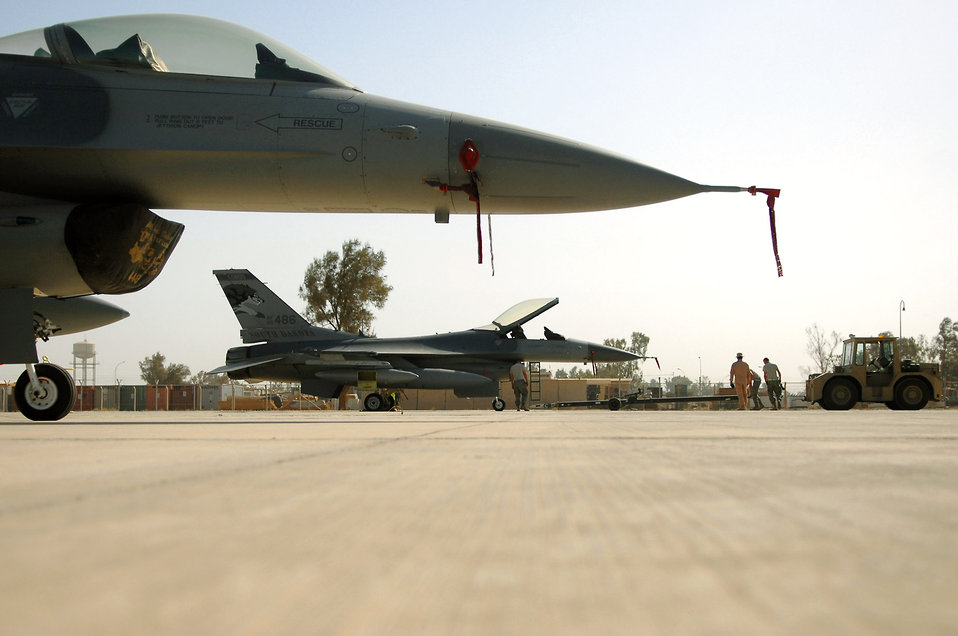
The changing of the Guard

Members of the Iowa and the Wisconsin Air National Guard, assigned to the 332nd Expeditionary Aircraft Maintenance Squadron at Balad Air Base, Iraq, prepare to move F-16 Fighting Falcon aircraft June 13 into hardened shelters. The aircraft and the personnel from Iowa and Wisconsin Air Guard units are being replaced with aircraft and Airmen from South Dakota and New York ANG units. Rotating fighters helps reduce the amount of time the aircraft are exposed to the hot and dusty weather of Iraq, which can wreak havoc on the planes' components.